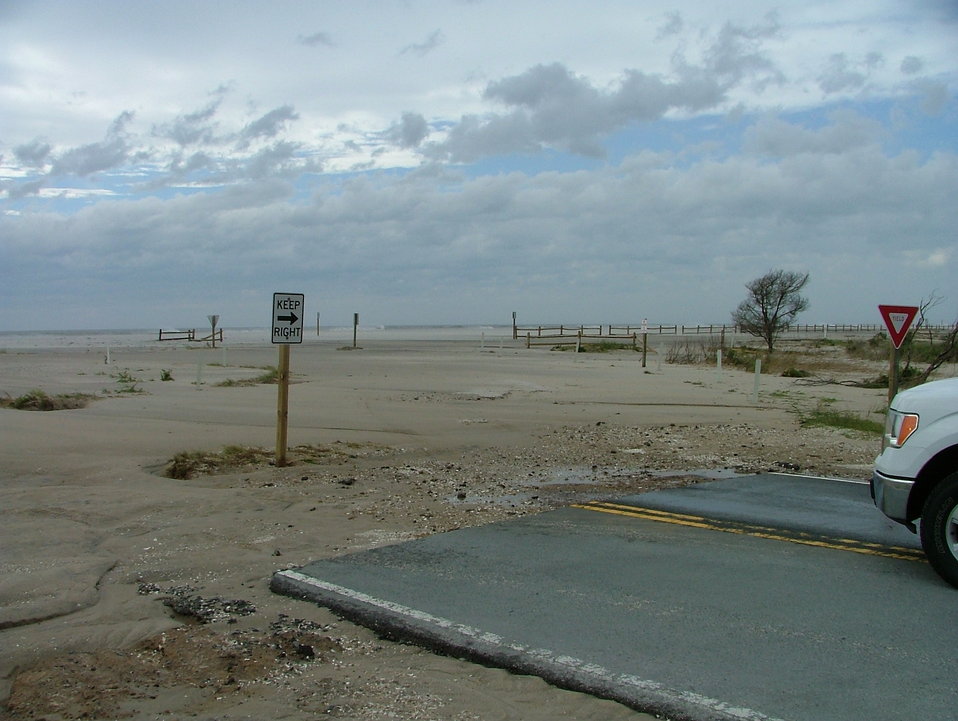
Damage to parking lots

The end of Beach Road and the damage caused to parking lots at Chincoteague National Wildlife Refuge in Virginia from Hurricane Irene.